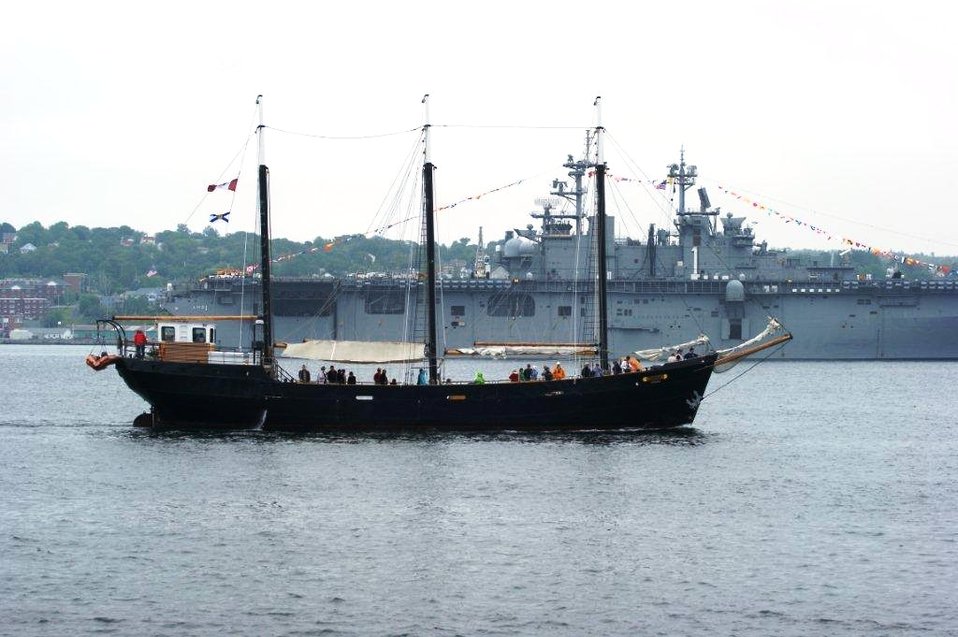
Ambassador David Jacobson and His Wife, Julie, Spend Time Aboard the USS Wasp (back) as Canadians Celebrate their Navy's 100th Anniversary on the MV Silva (front)

U.S. Ambassador to Canada David Jacobson and his wife, Julie Jacobson, spend time aboard the USS Wasp, the large ship in the background, with the MV Silva, the small ship located in the front of the photo, celebrate the Canadian Navy’s 100th Anniversary on June 30, 2010.